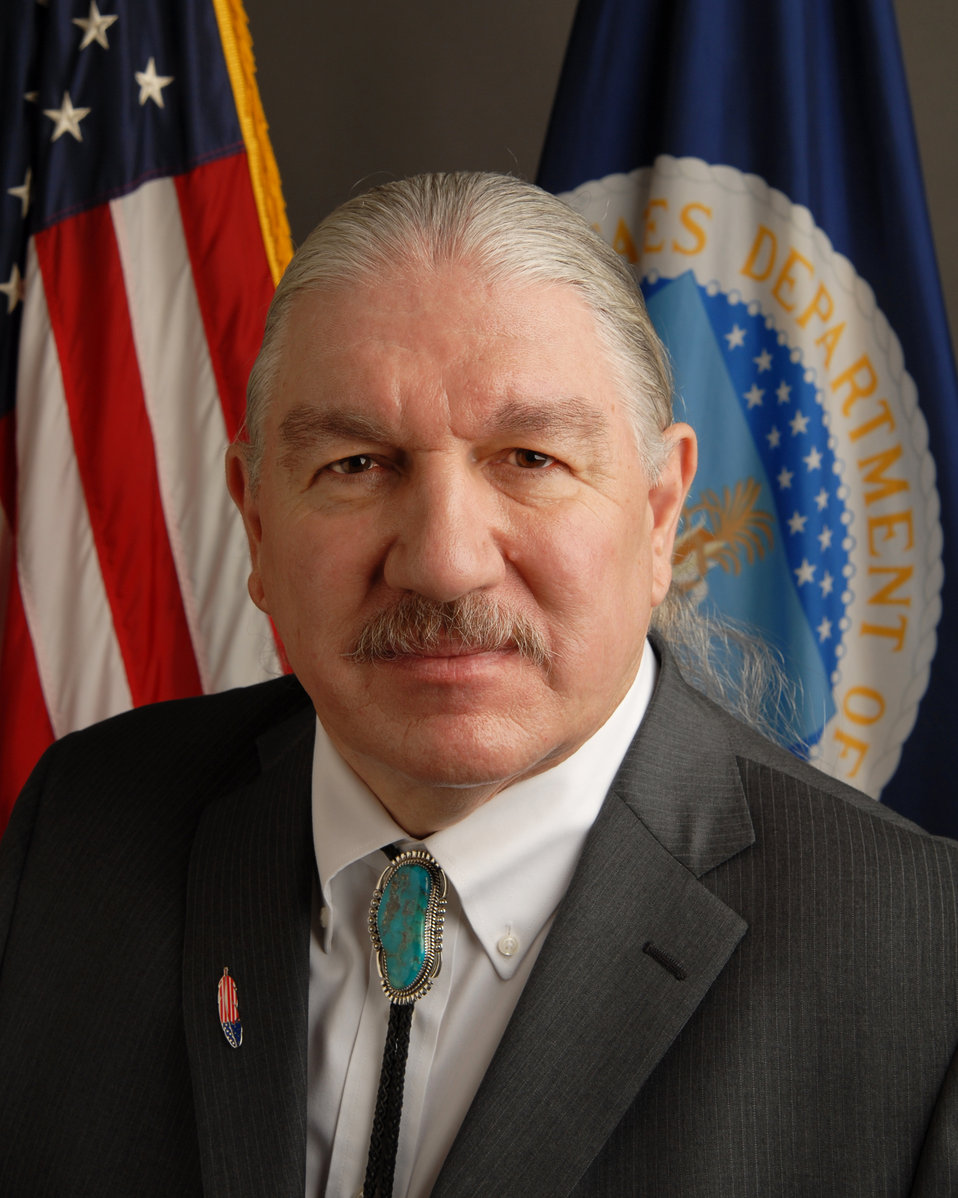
20111103-NRE-KJH-0015 Deputy Under Secretary for Natural Resources and Environment Arthur Blazer

Deputy Under Secretary for Natural Resources and Environment, Arthur Blazer.